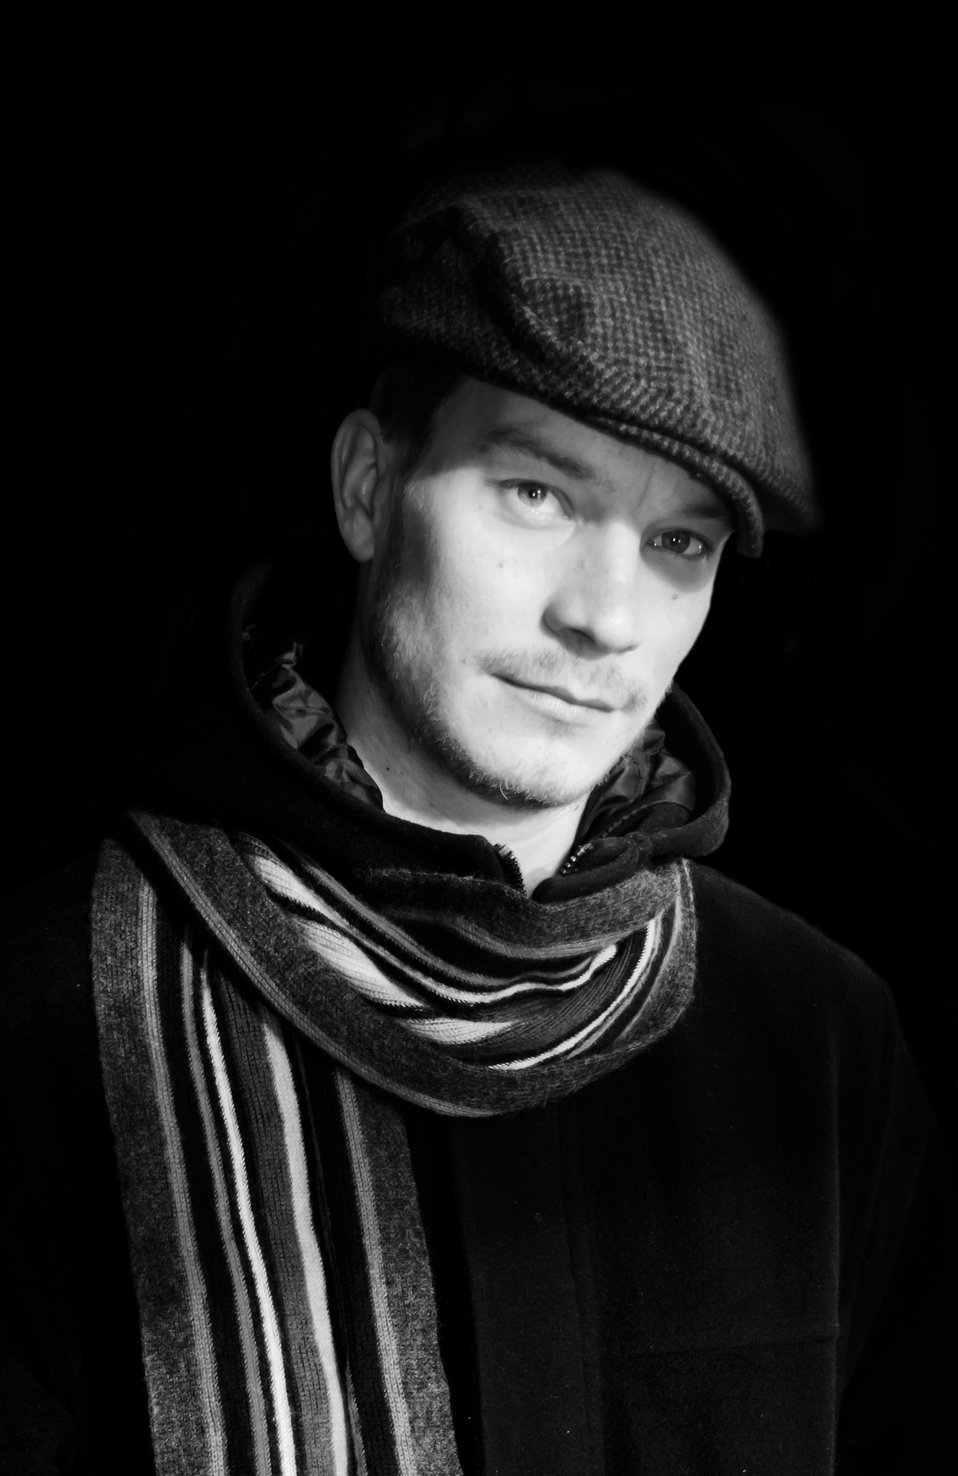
Winter fashion -black and white.